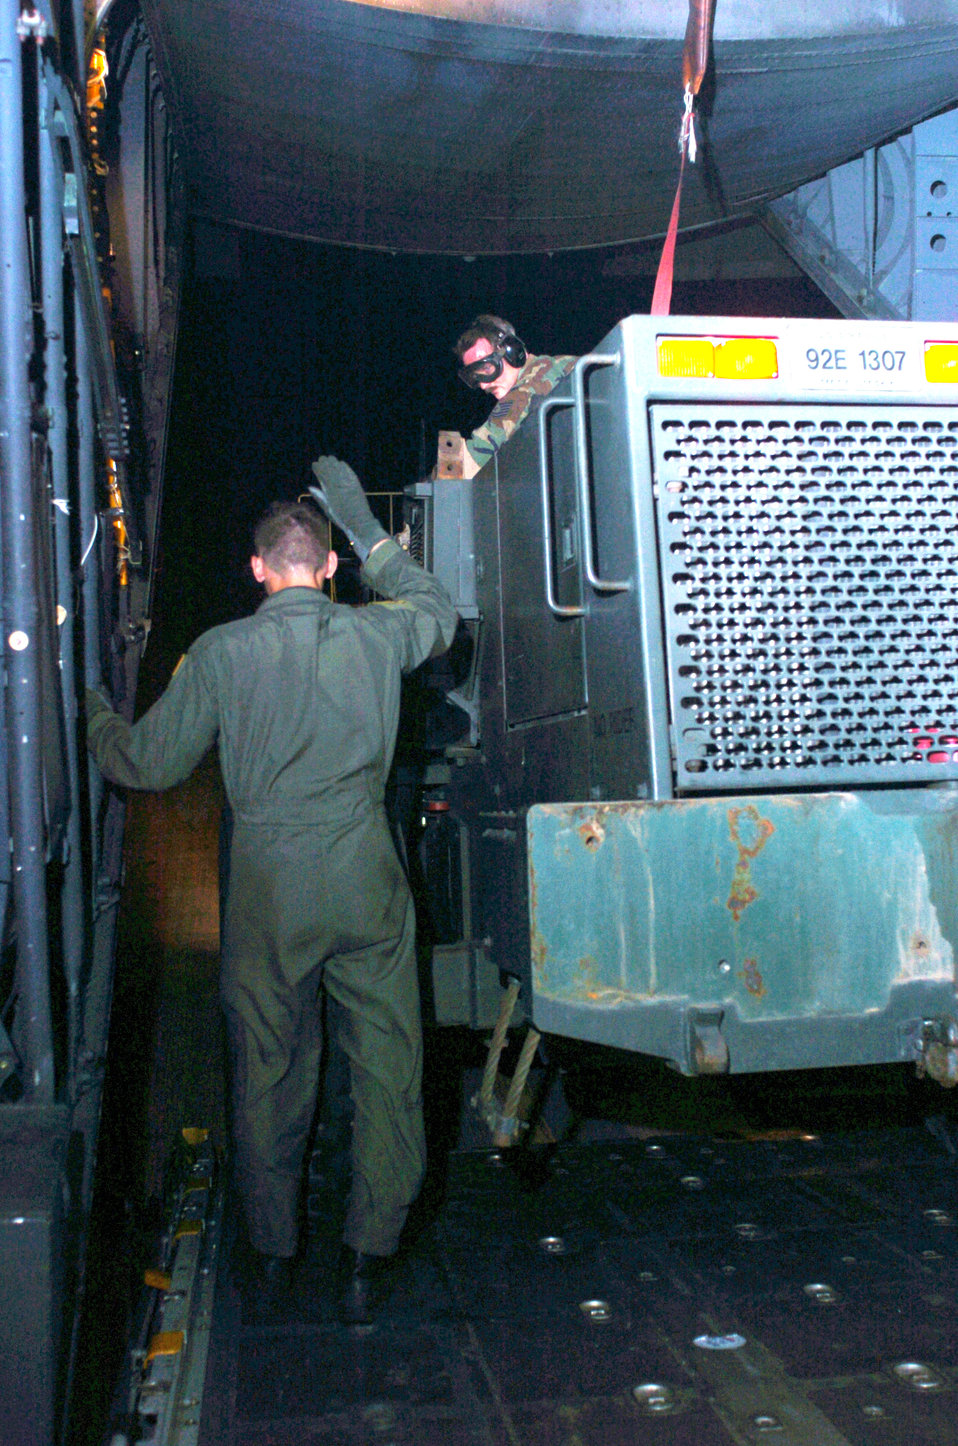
Deployed Airmen support Operation Unified Assistance

LANGKAWI, Malaysia -- Airman 1st Class Nick Truman guides a forklift being delivered here off of a C-130 Hercules for humanitarian aid supporting Operation Unified Assistance. More than 13,000 Marines, Sailors, Airmen, Soldiers and Coast Guardsmen with Combined Support Force 536 are working with international militaries and nongovernmental organizations to aid people in Thailand, Sri Lanka and Indonesia after a magnitude 9.0 earthquake Dec. 26 triggered devastating tsunamis. Airman Truman is deployed with the 374th Air Expeditionary Wing supporting Operation Unified Assistance.